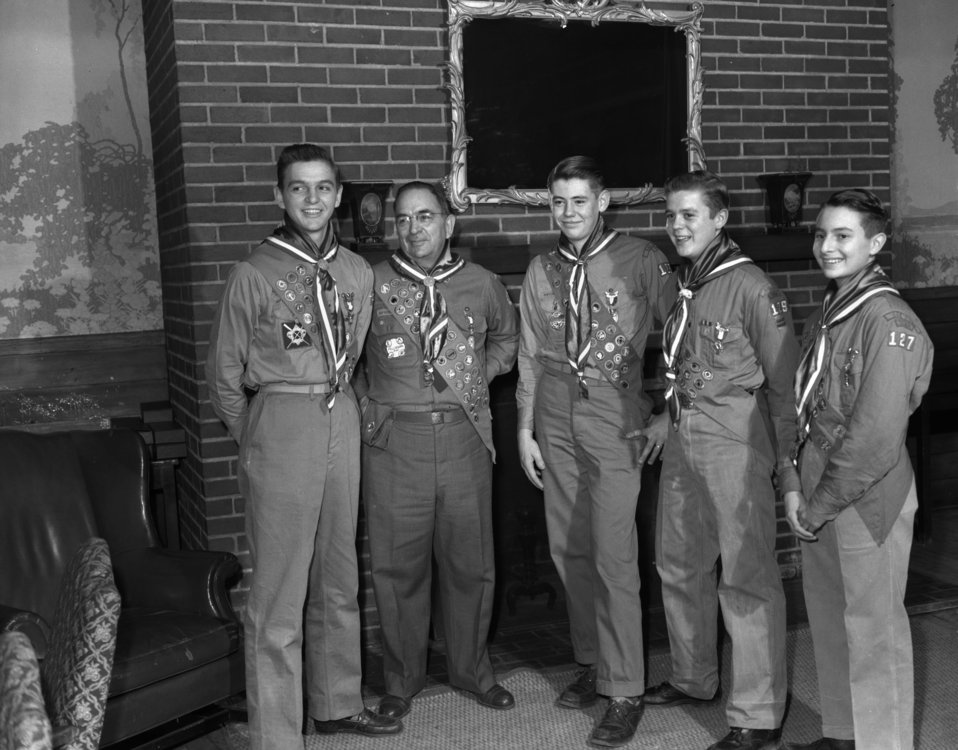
Boy Scout Eagles

4254-1 DOE photo by Ed Westcott
Oak Ridge Tennessee Jan. 1948